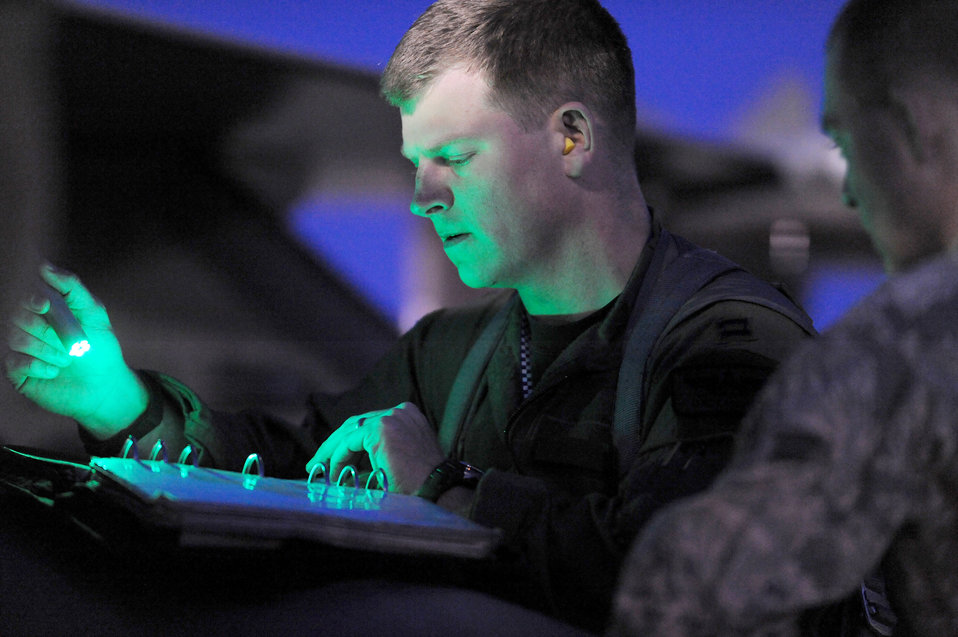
Shaw aircrews train at Red Flag

Capt. Mathew Russell goes over pre-flight paperwork before a night mission at Red Flag 10-3 Feb 25, 2010, at Nellis Air Force Base, Nev. Captain Russell is an F-16 Fighting Falcon pilot assigned to the 55th Fighter Squadron at Shaw AFB, S.C. Red Flag is a realistic combat training exercise involving the air forces of the United States and its allies. The exercise is conducted on the 15,000-square-mile Nevada Test and Training Range, north of Las Vegas.